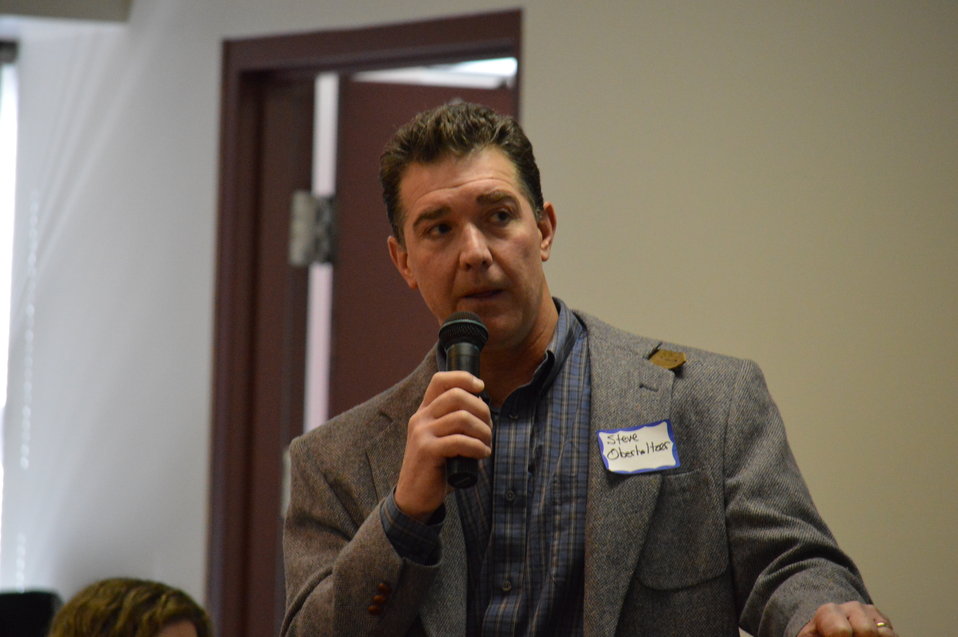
Eagle Summit III

Steve Oberholtzer at the Eagle Summit III in Denver, Colorado on March 20, 2014 at the Rocky Mountain Arsenal National Wildlife Refuge.